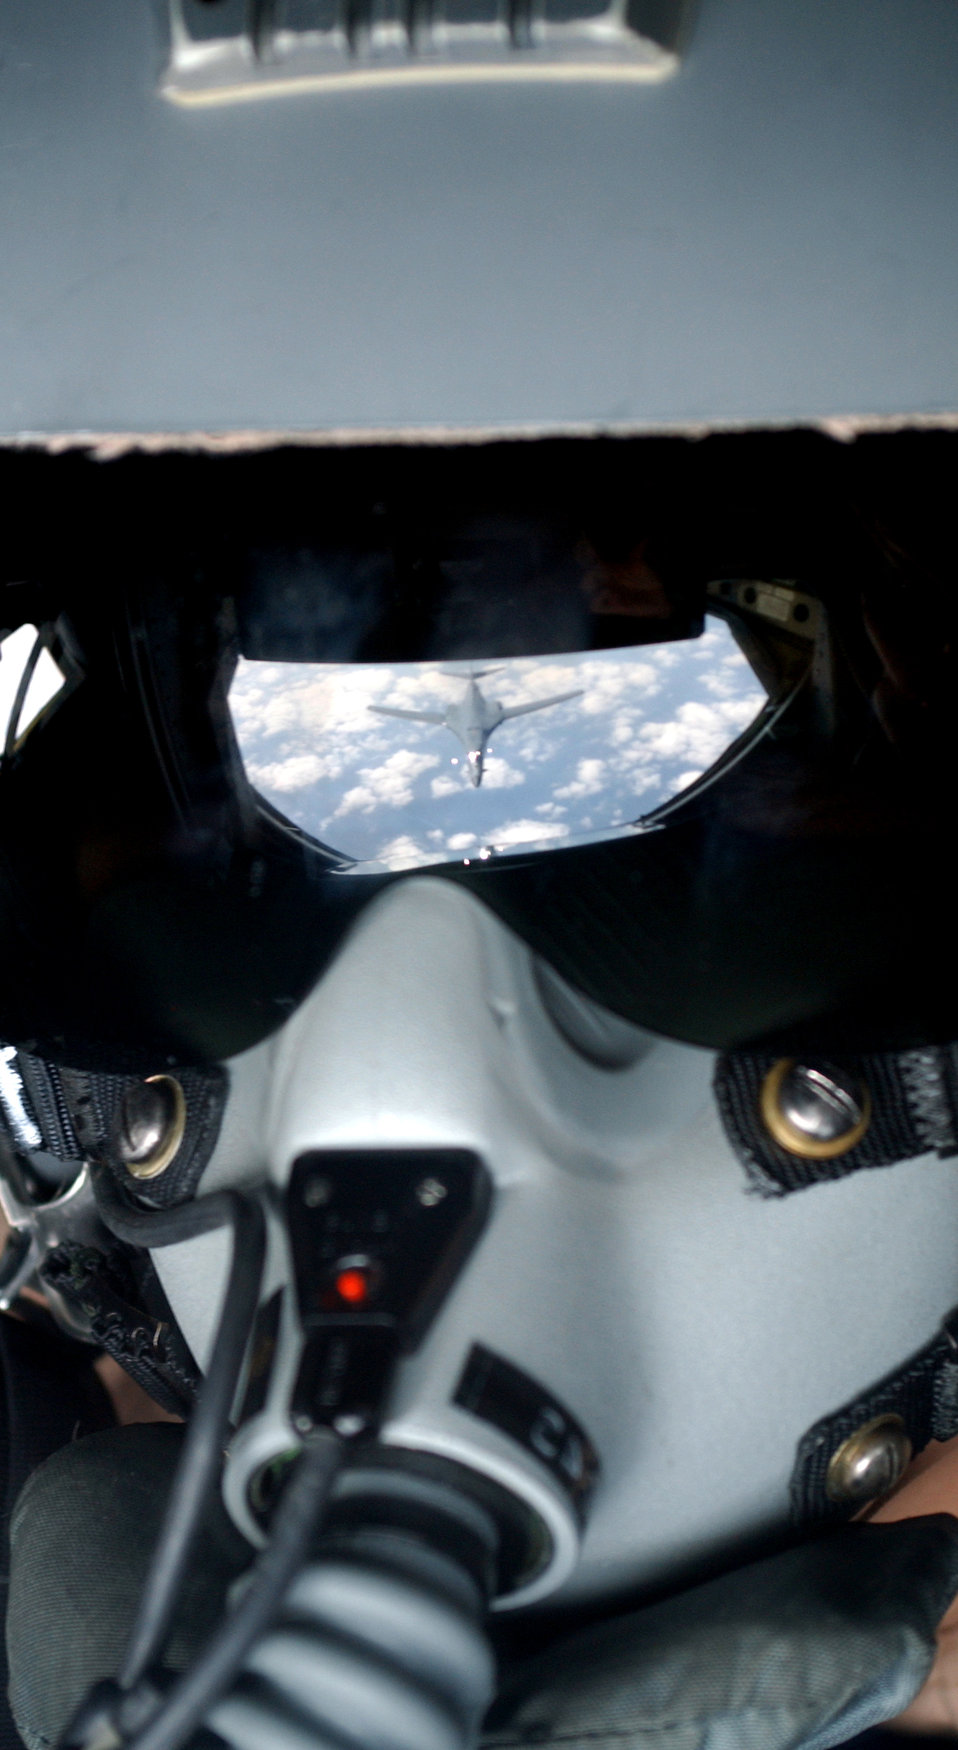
I spy

ONBOARD A KC-135 STRATOTANKER -- A B-1B Lancer is reflected on the facial shield of Staff Sgt. Andrew Diaz after an inflight refueling. After the fill up, the B-1 continued its mission of supporting operations Enduring Freedom and Iraqi Freedom. Sergeant Diaz is a boom operator with the 28th Expeditionary Air Refueling Squadron.